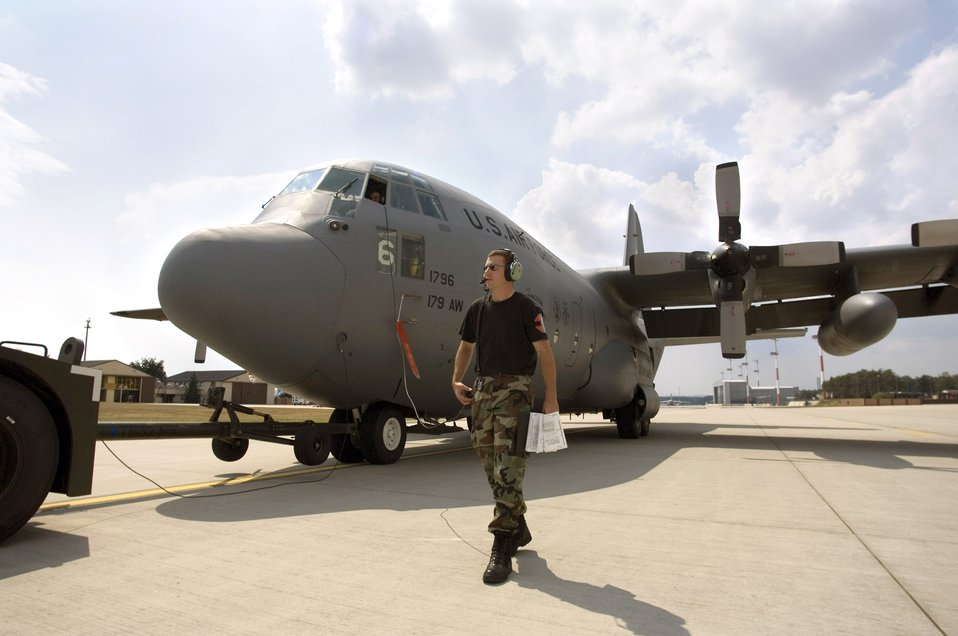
In tow

Tech. Sgt. Ken Schonauer walks alongside a C-130 Hercules in tow to its parking position on Thursday, July 13, at Ramstein Air Base, Germany. Sergeant Schonauer, a crew chief, and members of the Ohio Air National Guard's 179th Airlift Wing from Mansfield, Ohio, are on temporary duty for the next six weeks at Ramstein, where they will fly missions throughout Europe, Asia and Africa.